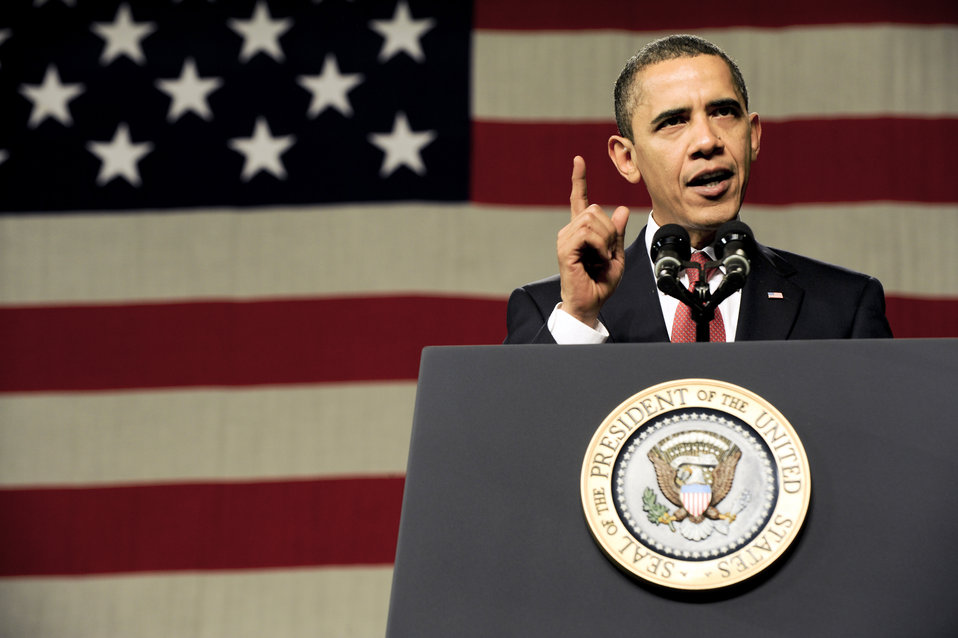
President visits Elmendorf Airmen

President Barack Obama gives a speech to a crowd of military personnel and civilians gathered Nov. 12, 2009, at Elmendorf Air Force Base, Alaska. The president was at the base to meet with servicemembers and offer remarks to the local community.